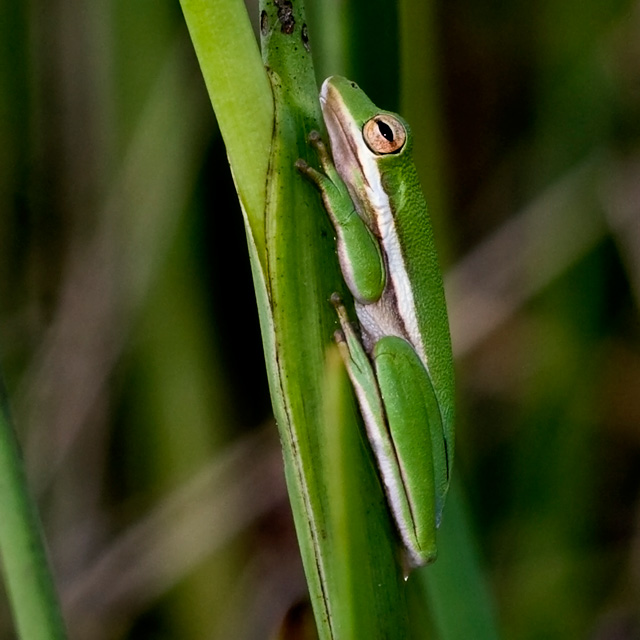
green tree frog

Loxahatchee National Wildlife Refuge, FL